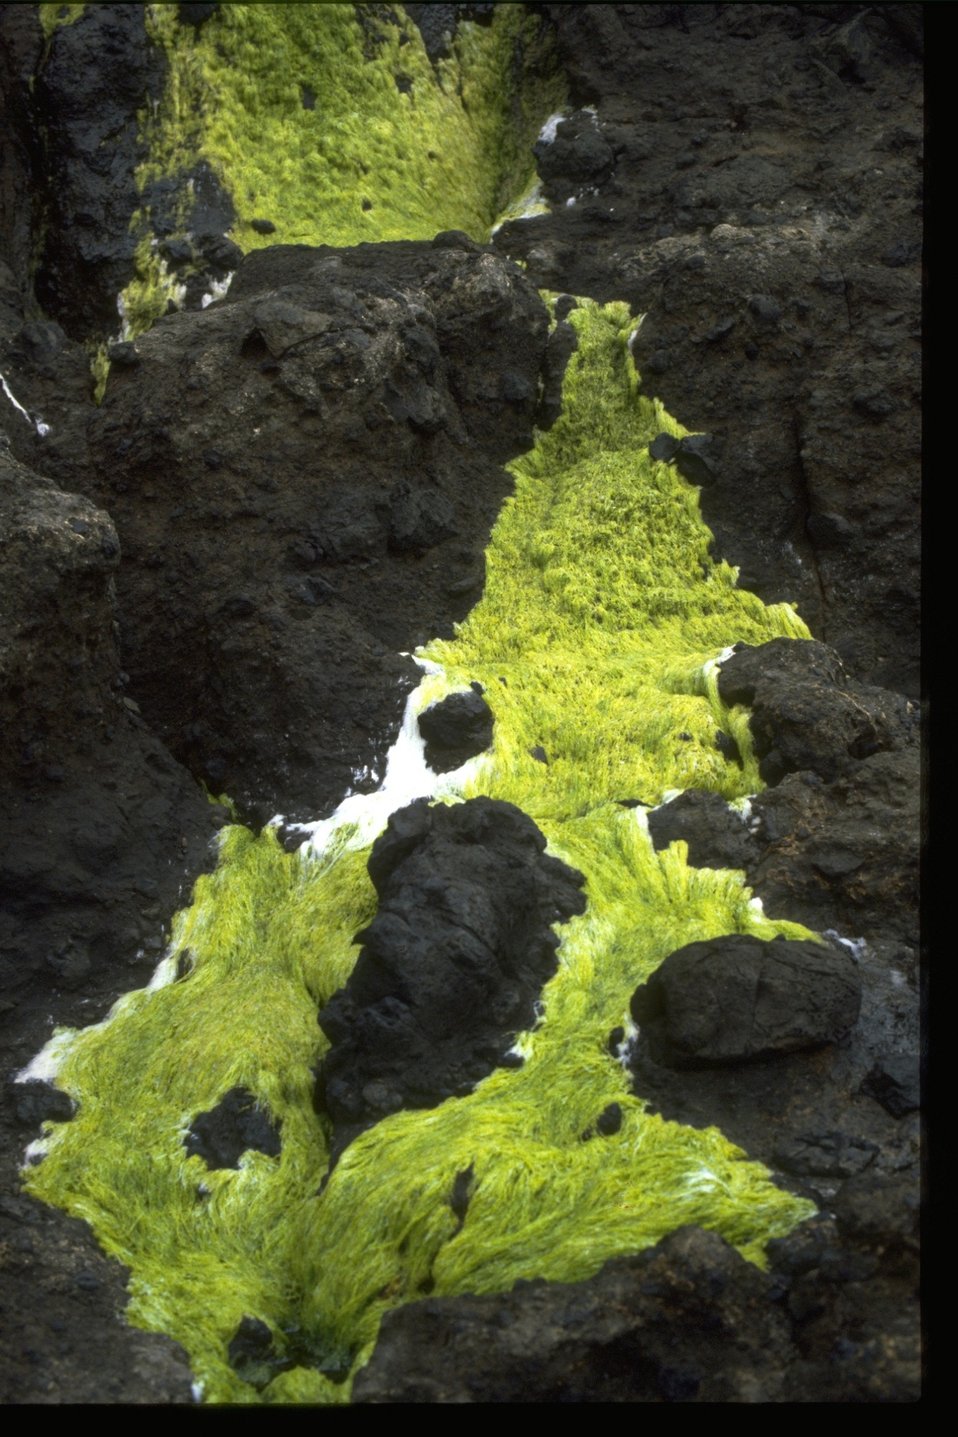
Green algae.